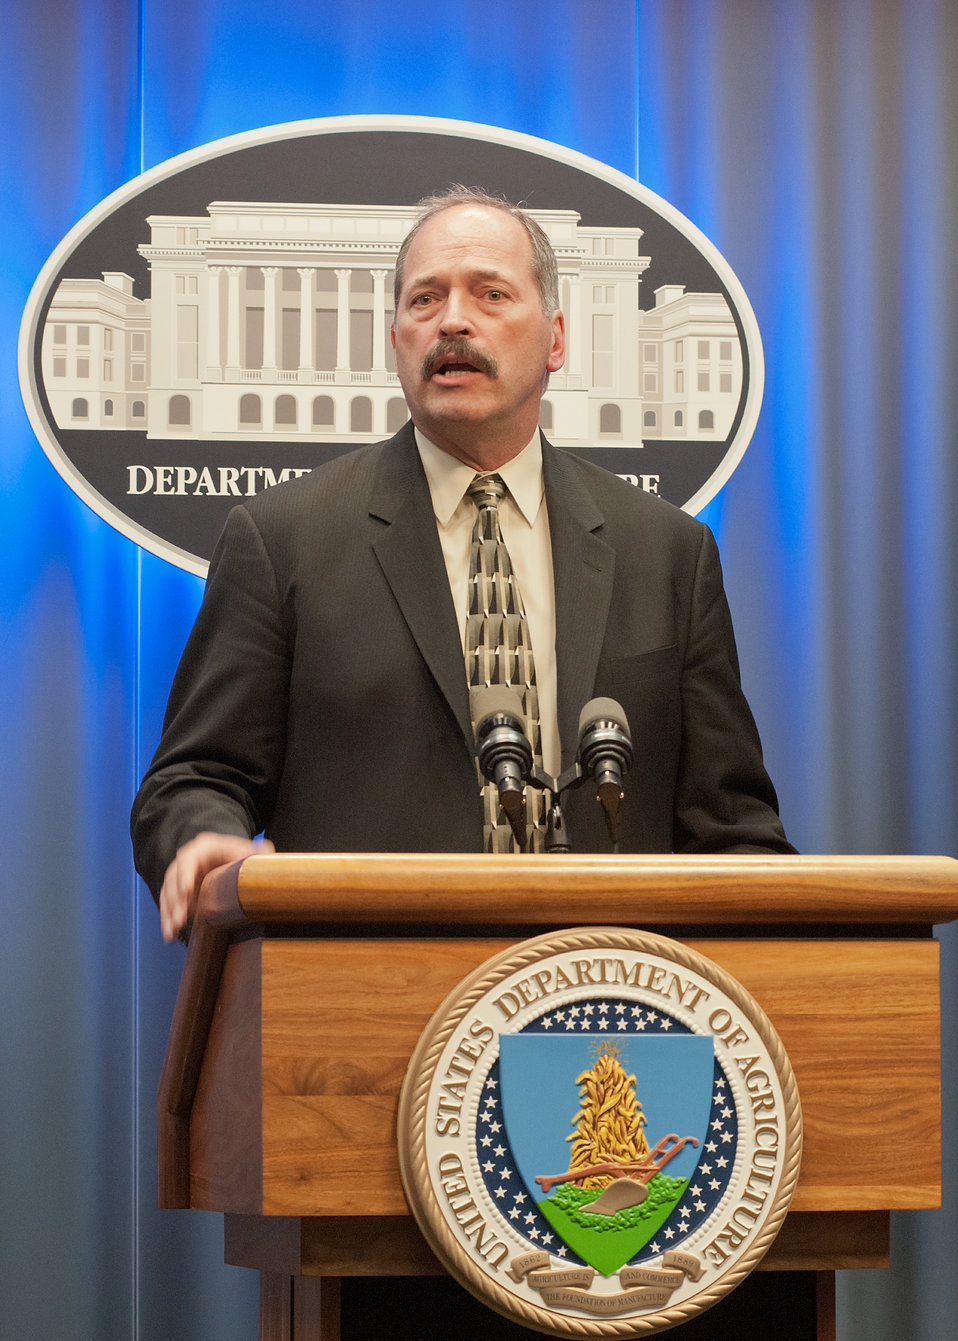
David Gombas, Senior Vice President, Food Safety and Technology, United Fresh Produce Association discussed integrating On-Farm Food Safety Project protocols with United Fresh’s Harmonnized USDA’s Good Agricultural Practices (GAP) standards. Gombas along with Agriculture Deputy Secretary Dr. Kathleen Merrigan and leaders from agriculture and food organizations announced the release of the On-Farm Food Safety Project Tool, www.onfarmfoodsafety.org at the United States Department of Agriculture in Washington, D.C., on Thursday, December 15, 2011. The On-Farm Food Safety Project is the first of its kind and was developed by a broad coalition of farm and produce industry partners with lead funding from the USDA Risk management Agency.